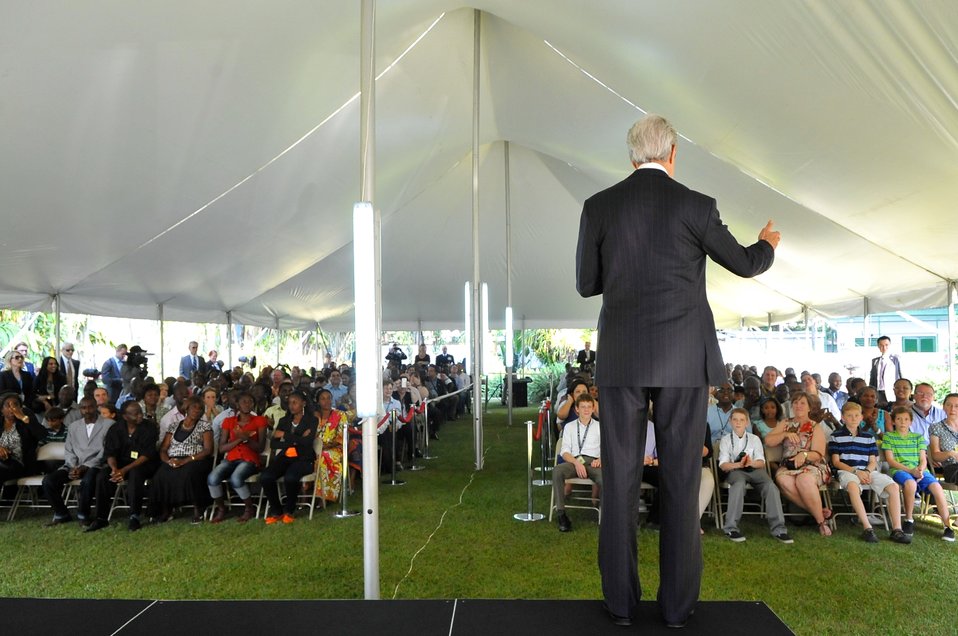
Secretary Kerry Addresses Members of Embassy Kinshasa

U.S. Secretary of State John Kerry addresses employees of Embassy Kinshasa during a visit to the Democratic Republic of Congo on May 3, 2014.